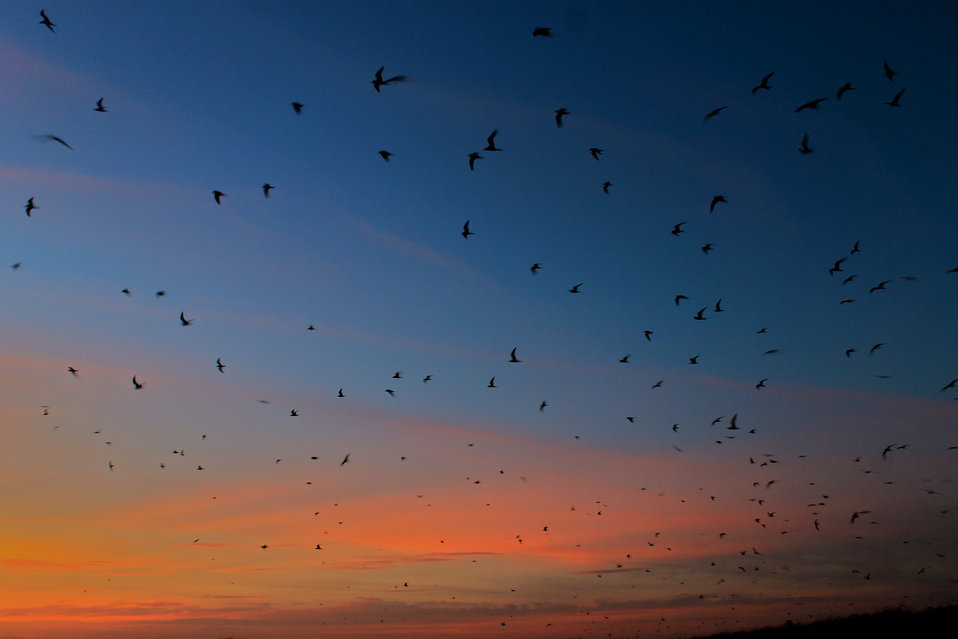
Terns at sunset on west beach

Monomoy National Wildlife Refuge, MA.